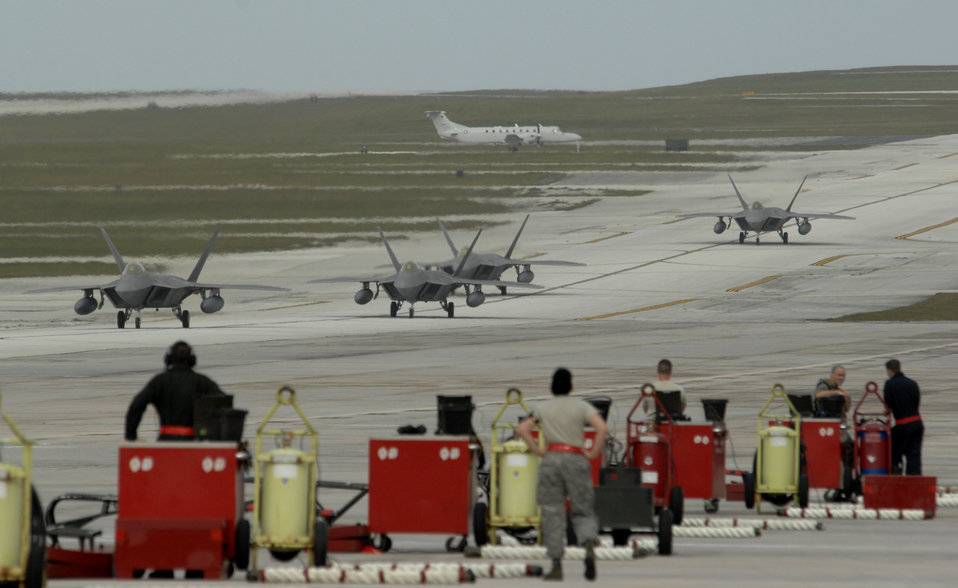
Largest deployment of F-22s under way

Maintainers prepare for the arrival of F-22 Raptors Jan. 18 deployed from Elmendorf Air Force Base, Alaska, at Andersen AFB, Guam. Andersen AFB officials received 12 F-22s and more than 250 Airmen for a three-month deployment.